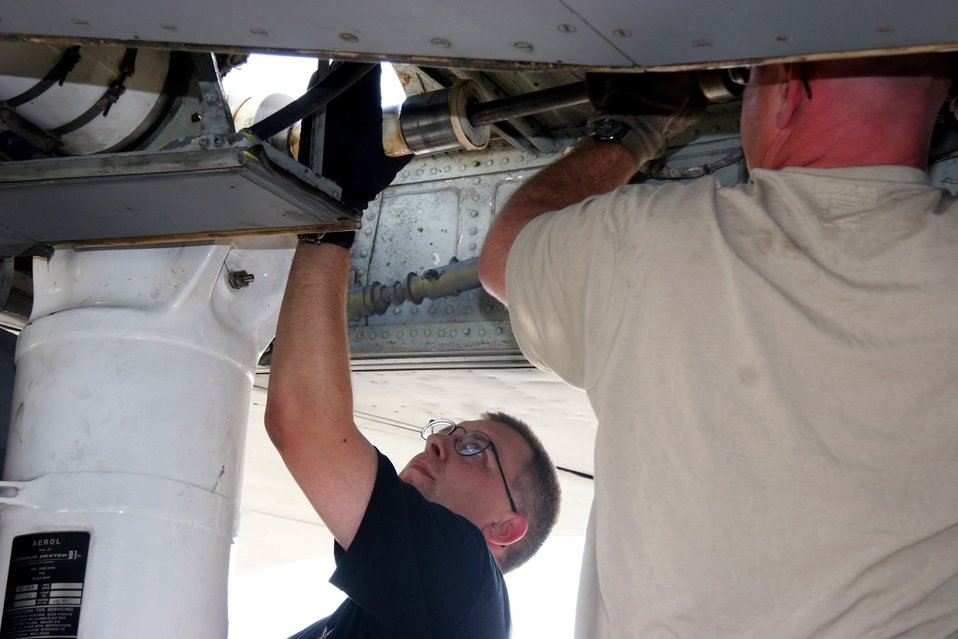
KC-135 Strut Change

Staff Sgt. Andrew Vesper (left) and Tech. Sgt. James Bernardo carefully remove the right main landing gear strut pin on a KC-135 Stratotanker Dec. 21. Care is used to prevent damage to the smooth bearing surfaces. The Airmen are assigned to the 380th Expeditionary Aircraft Maintenance Squadron and deployed from the 22nd Aircraft Maintenance Squadron at McConnell Air Force Base, Kansas.